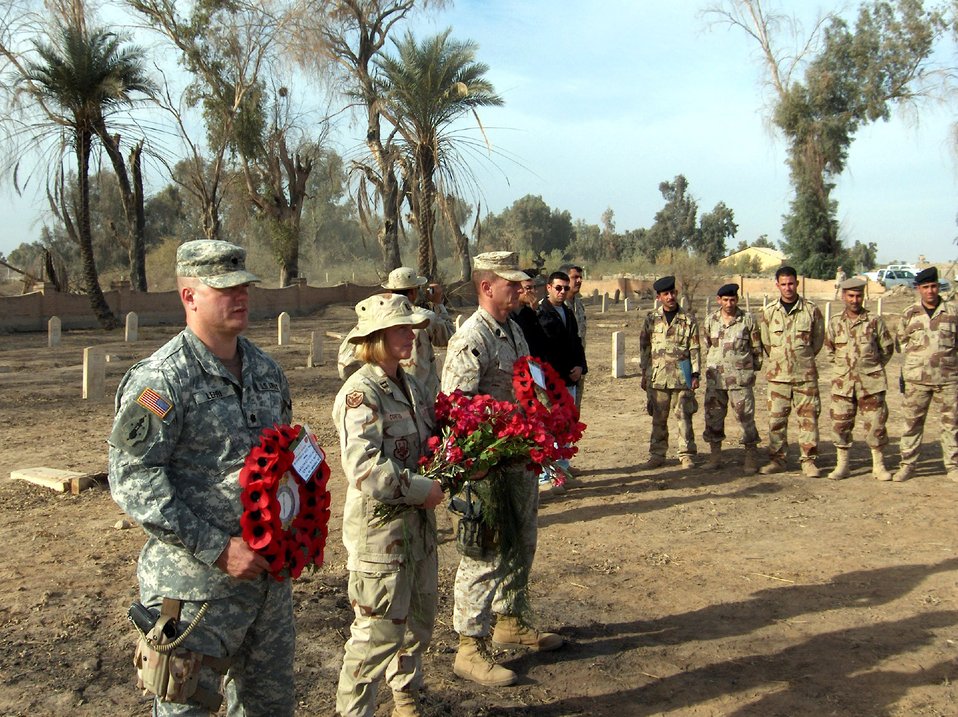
Captain marches into history

Capt. Jutta Cortes, center, led volunteer efforts in November 2005 to restore the Habbaniya cemetery in Iraq and organized the first official remembrance service there since 1959. The cemetery, located on the former British base, serves as the final resting place for many servicemembers and their families. The efforts by Captain Cortes led to a request by the RAF Habbaniya Association for her to join its British regiment in a remembrance service at The Cenotaph memorial in London's Whitehall Nov. 12. Captain Cortes is the deputy director of security forces for the 20th Air Force at F.E. Warren Air Force Base, Wyo.